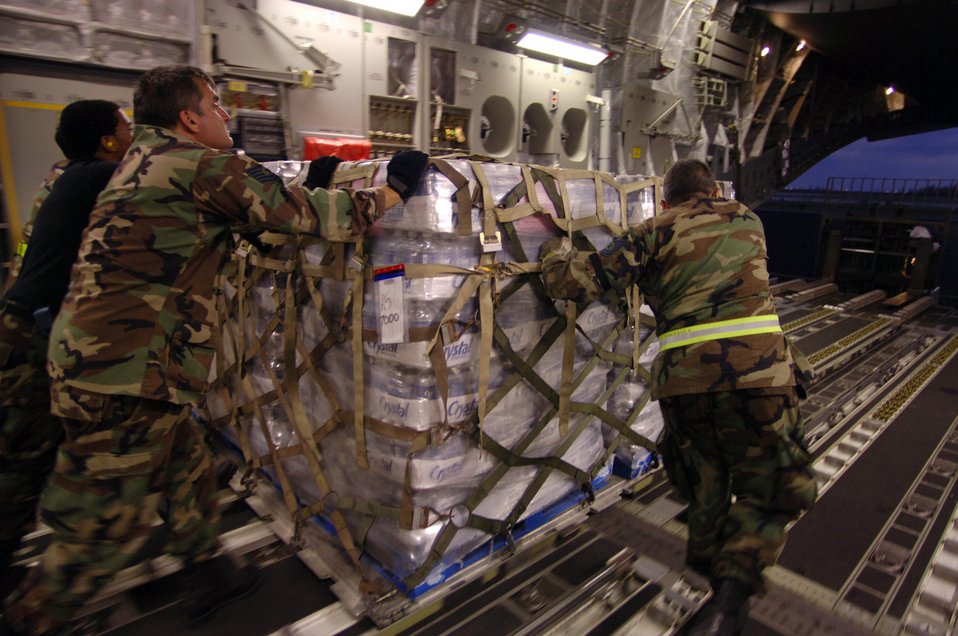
Hurricane Wilma

HOMESTEAD AIR RESERVE BASE, Fla. -- Members of the 70th Aerial Port Squadron unload relief aid from a C-17 Globemaster III here Oct. 27.